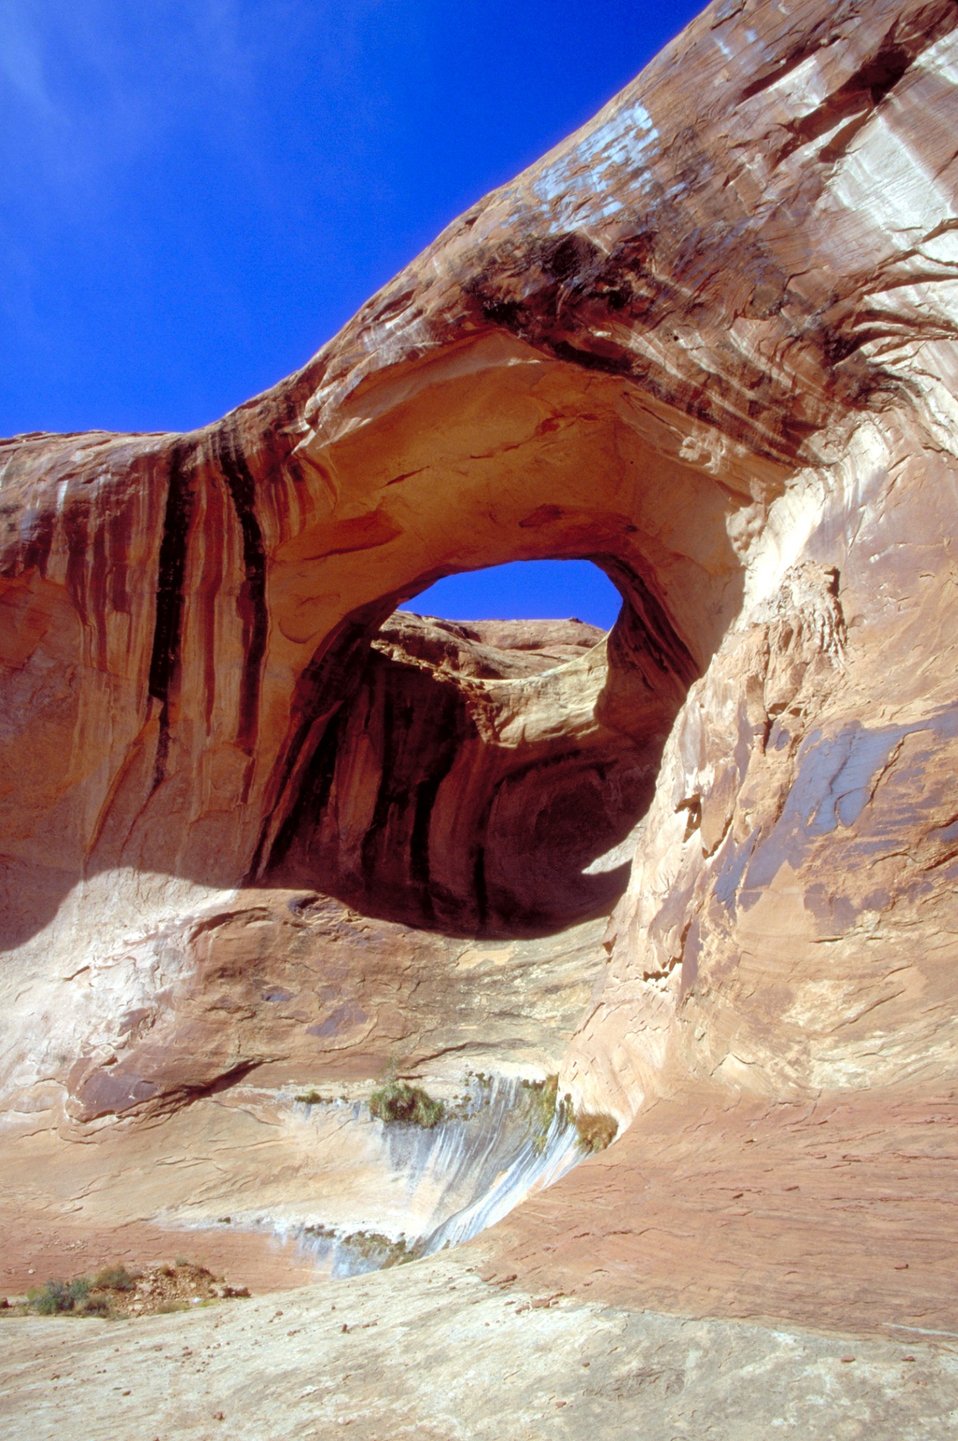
Bowtie Arch near Moab, Utah.